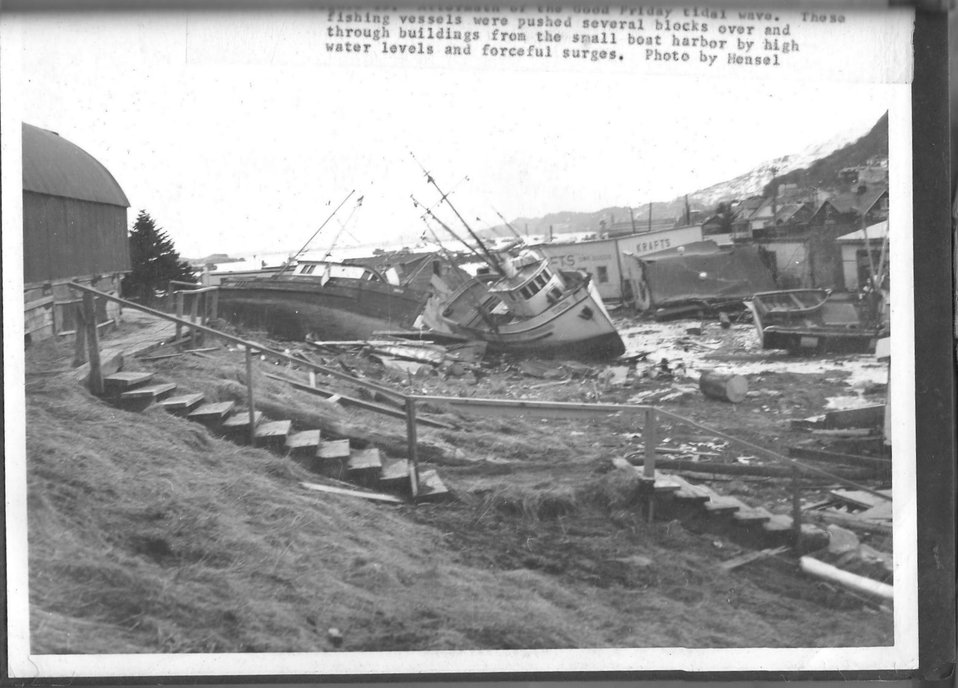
(1964) Good Friday Tsunami

Credit: USFWS

Source and Contact: Kodiak National Wildlife Refuge